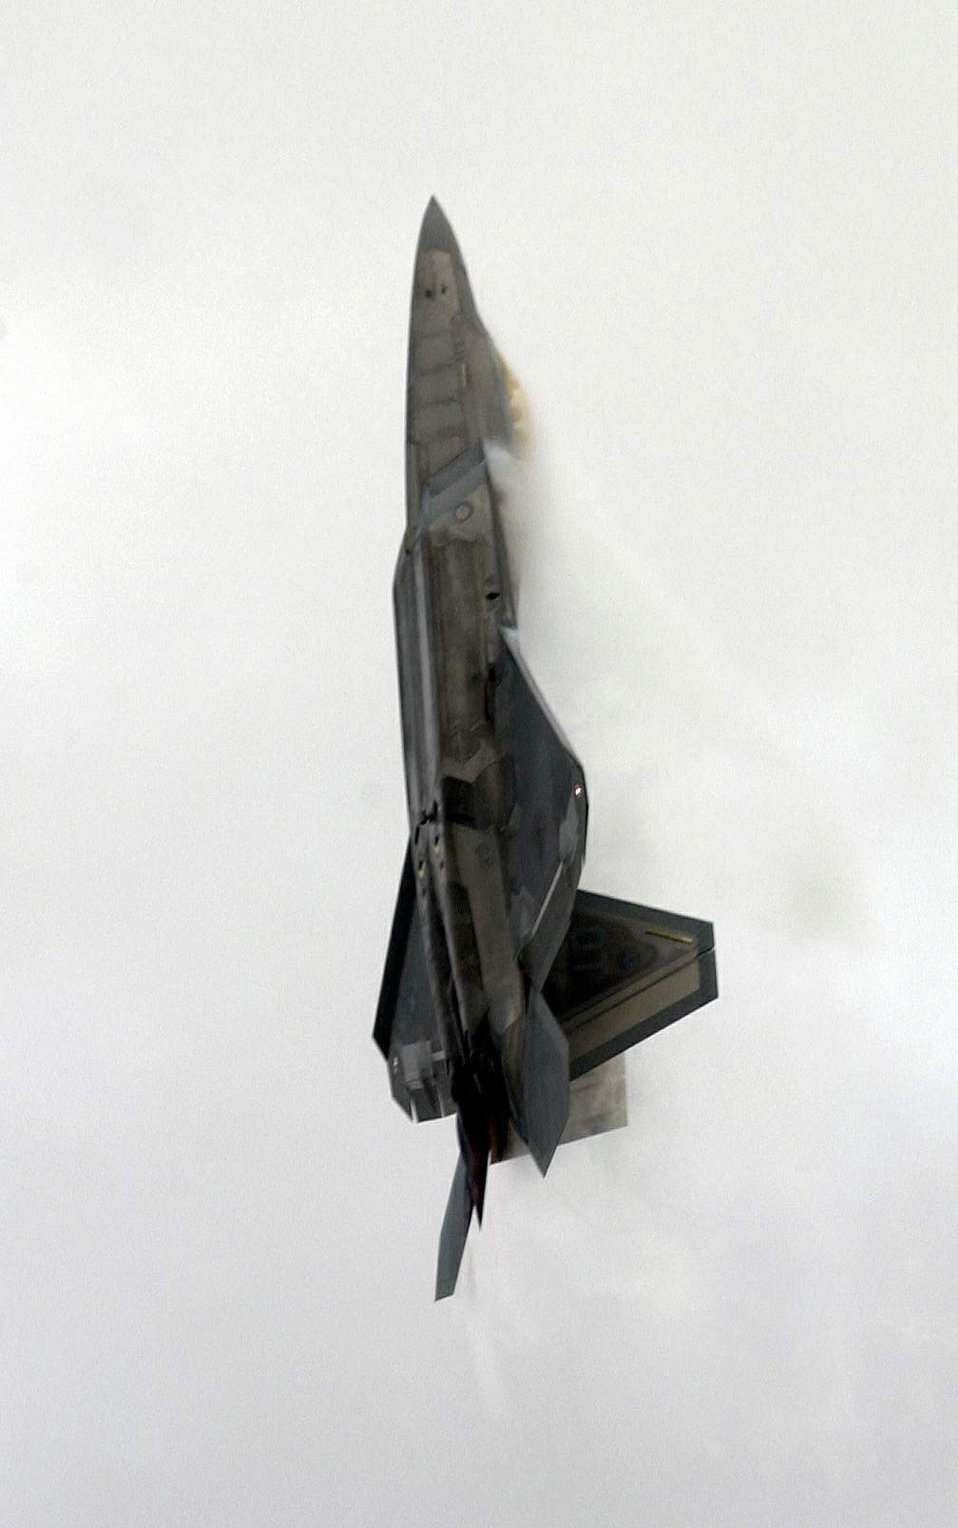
Arctic Thunder

An F-22 Raptor hovers vertically above the Arctic Thunder air show and open house at Elmendorf Air Force Base, Alaska, on Aug. 13. The Raptor was flown by Maj. Michael Shower, who will become the first commander of the F-22 squadron at Elmendorf next summer.